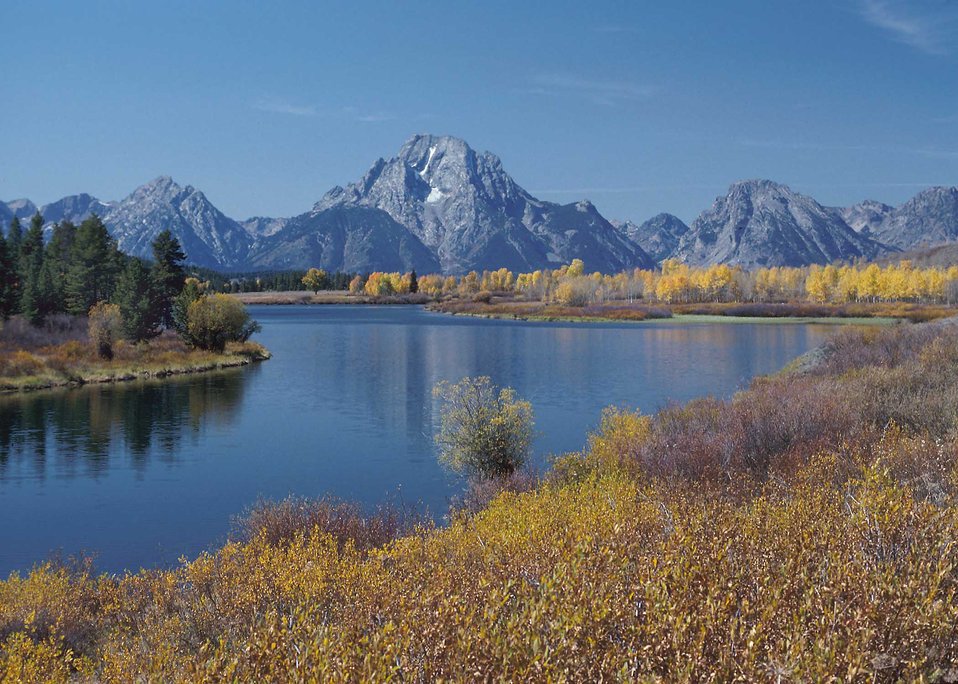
The Snake River flows outside Jackson, Wyoming.